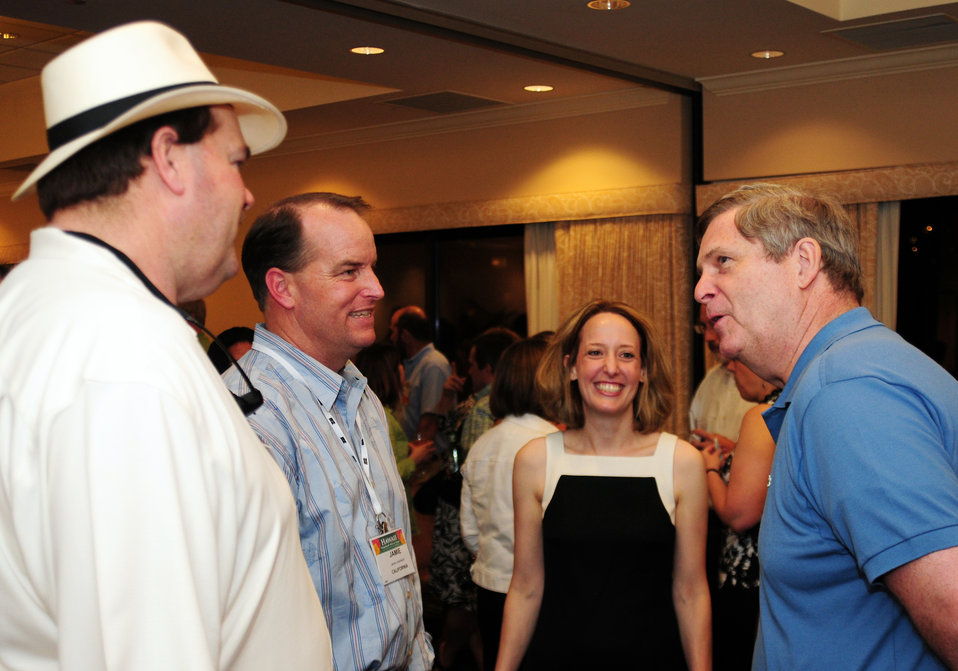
Agriculture Secretary Tom Vilsack talks with California Farm Bureau members at the Hilton Hawaiian Village, in Waikiki, Hawaii, on Sunday, January 8, 2012.